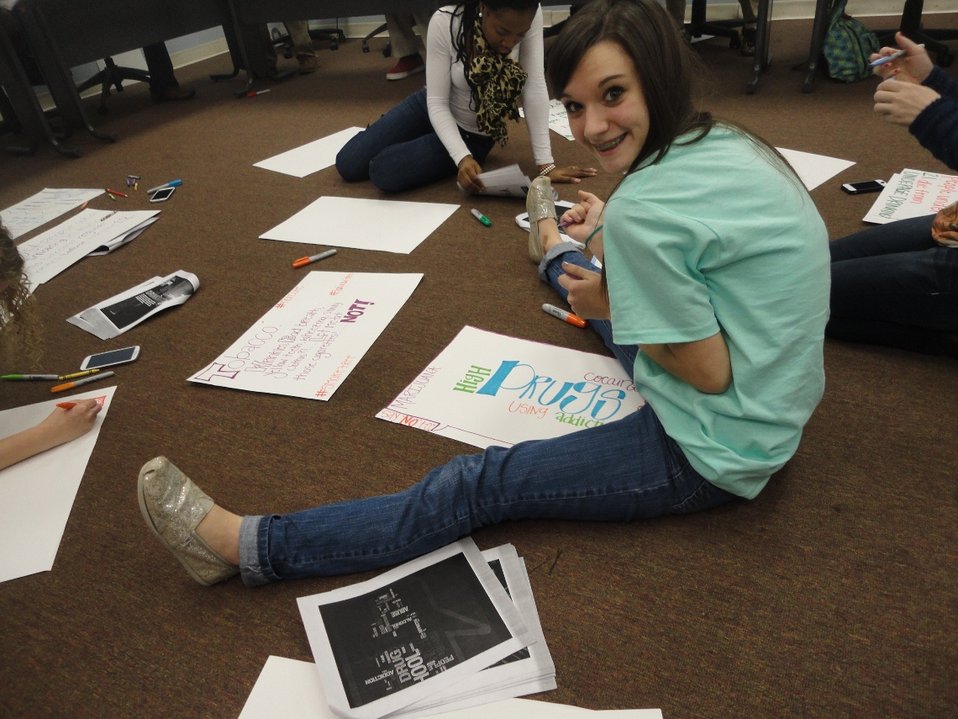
DREAM's, MS Student Advisory Board of Youth Highway Safety NDFW 2013

Mississippi High School Students participate in NDFW 2013 events.